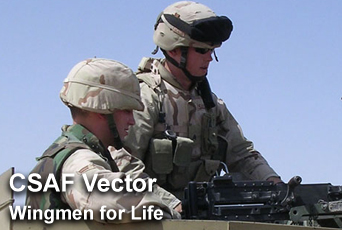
CSAF's Vector focuses on Airmen as wingmen for life

The newest Air Force chief of staff's Vector focuses on Airmen as wingmen for life.